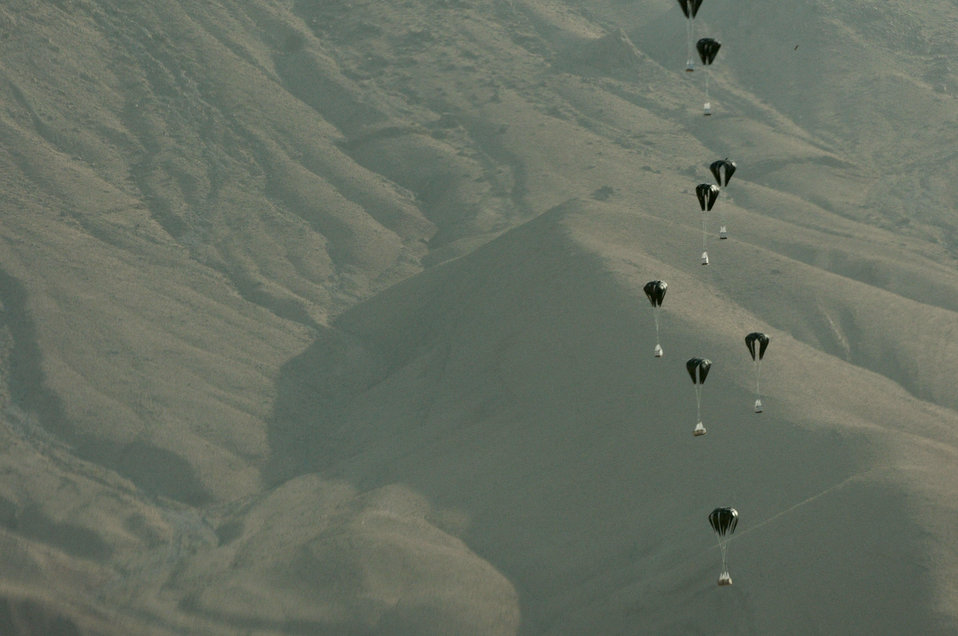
Mission over Afghanistan

Pallets of supplies parachute down to a forward operating base in Oruzgan Province, Afghanistan, June 22, 2011, after being dropped by a C-130 Hercules aircrew from the New York Air National Guard's 107th Airlift Wing.